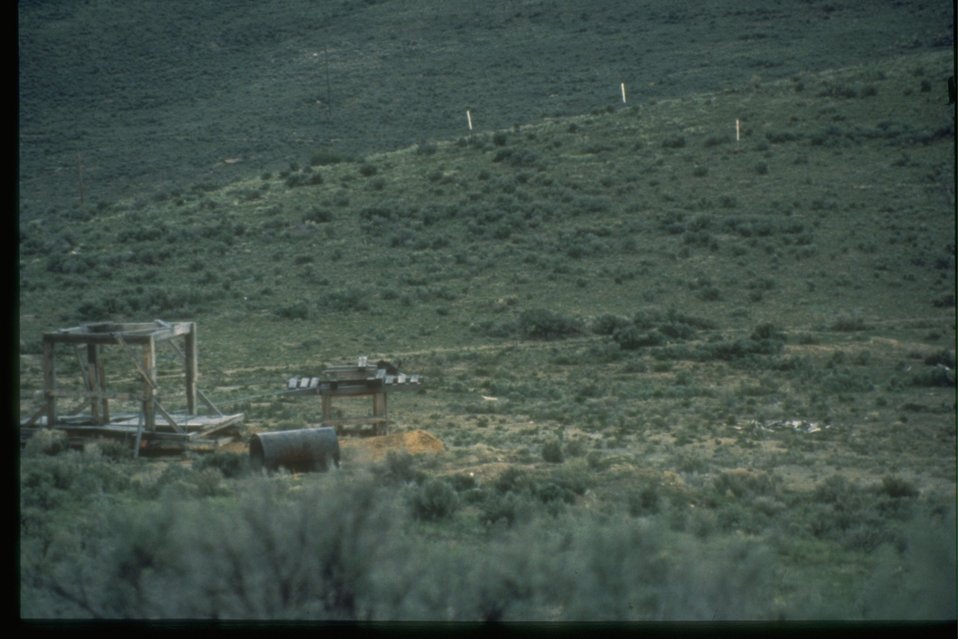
Mine and survey stakes.